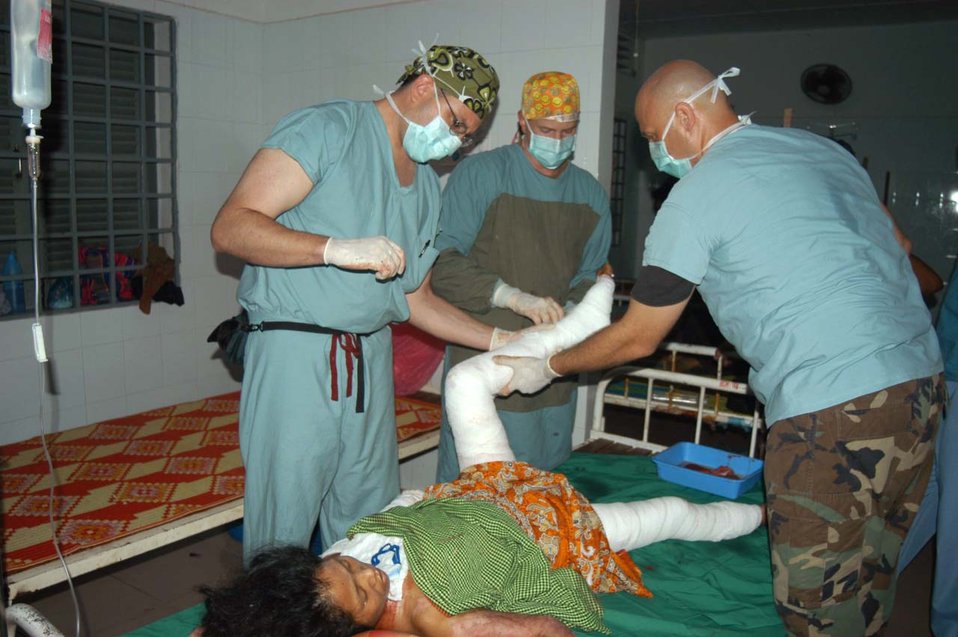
Medics treat more than 620 patients

KEP, Cambodia - (From left) Capt. (Dr.) Jason Rosenberg, Lt. Col. (Dr.) Jim Walter and Master Sgt. Kristopher Krenzke bandage a burn patient's legs May 20 at a hospital compound here. All three Airmen are part of a 20-member blast resuscitation and victim assistance mission.